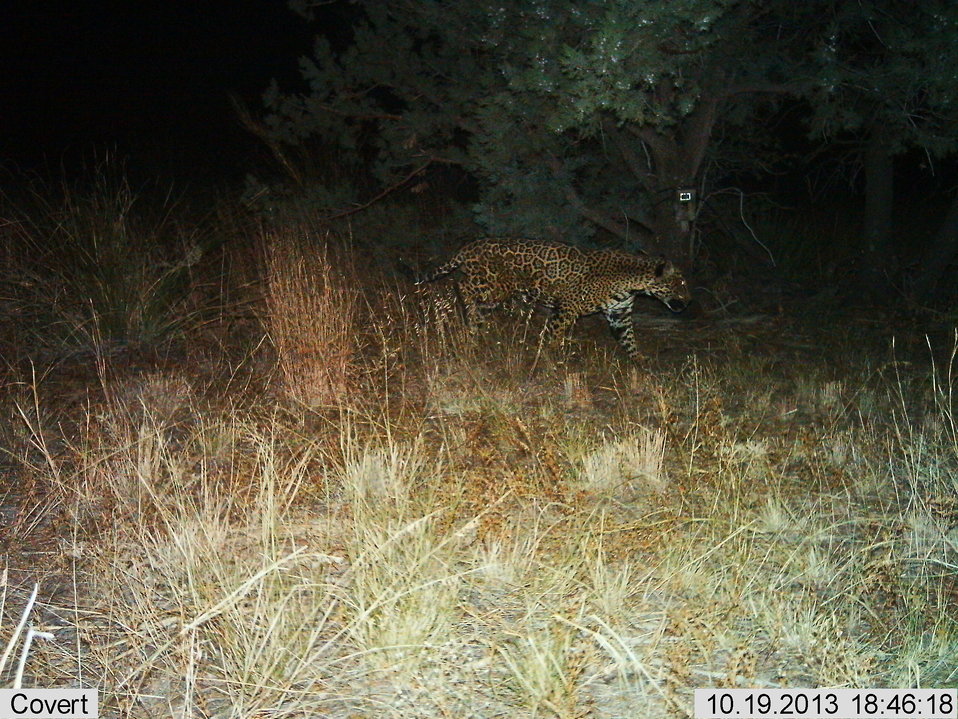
Male jaguar photographed by automatic wildlife cameras in the Santa Rita Mountains on October 19, 2013, as part of a U.S. Fish and Wildlife Service/Department of Homeland Security-funded jaguar survey conducted by University of Arizona. This is the second of three photos from October 19. The jaguar has been photographed previously at this location.